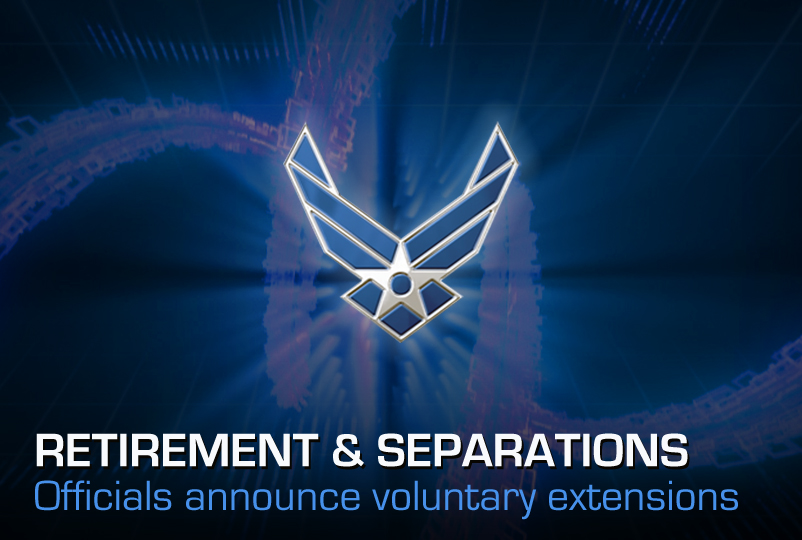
Air Force officials announce voluntary separation, retirement extensions